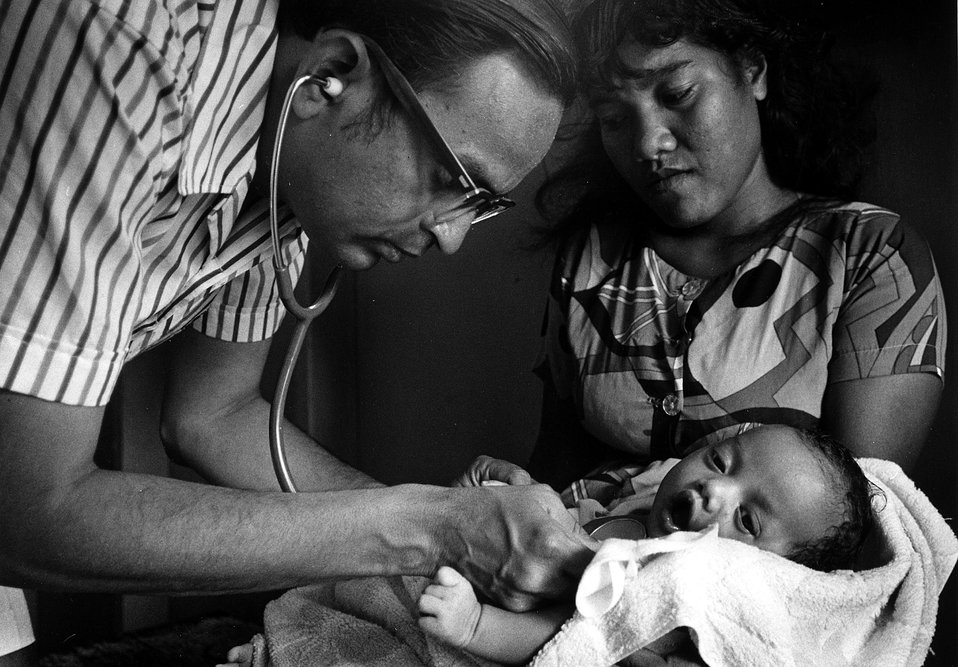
Medical team conducting annual medical examinations of Marshallese people who were exposed to radioactive fallout from an atmospheric nuclear weapons test in 1954.